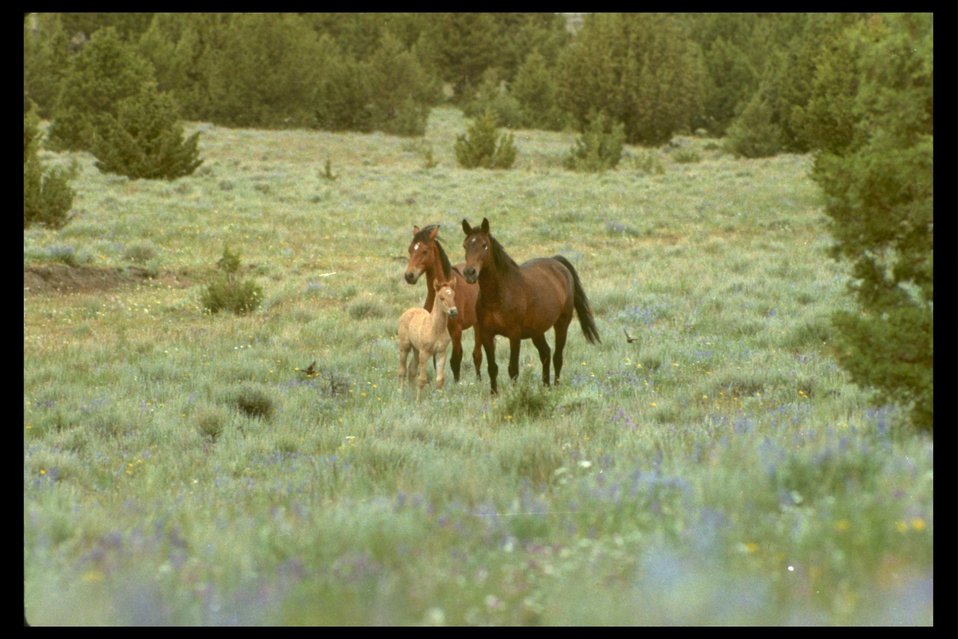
Kiger mustangs on the Kiger HMA range.